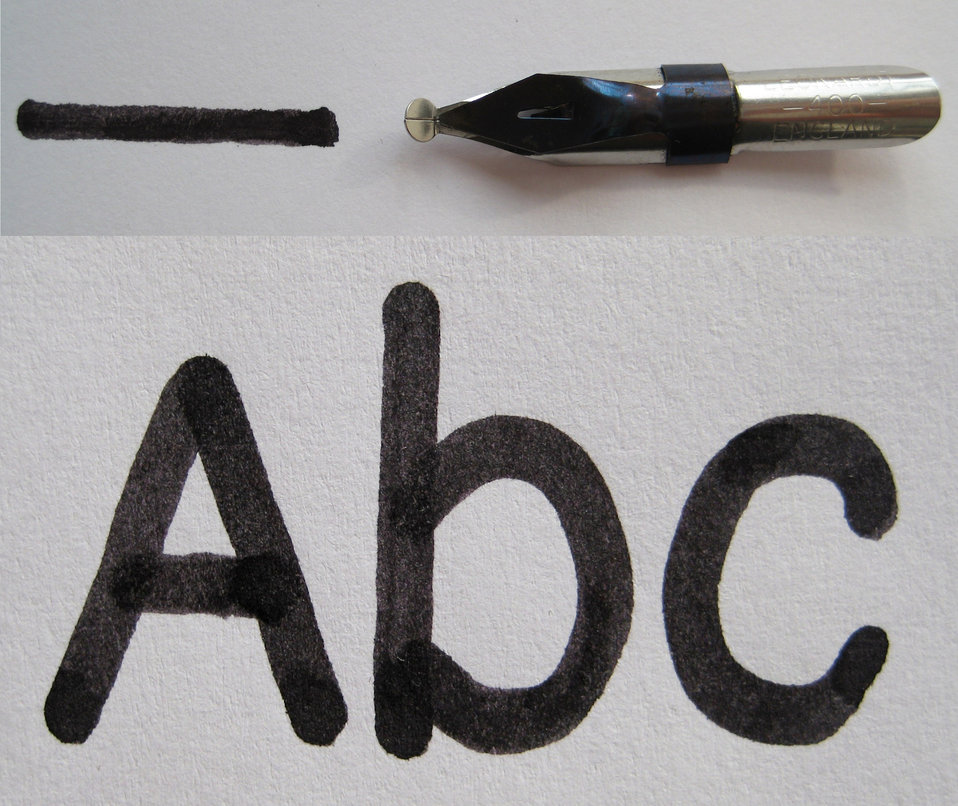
Deutsch: Redisfeder mit Strich und Schriftbeispiel Ornamental nib with a stroke and writing sample Fran√ßais†: Plume pour traits √† filets avec un trait et un caract√®re typique